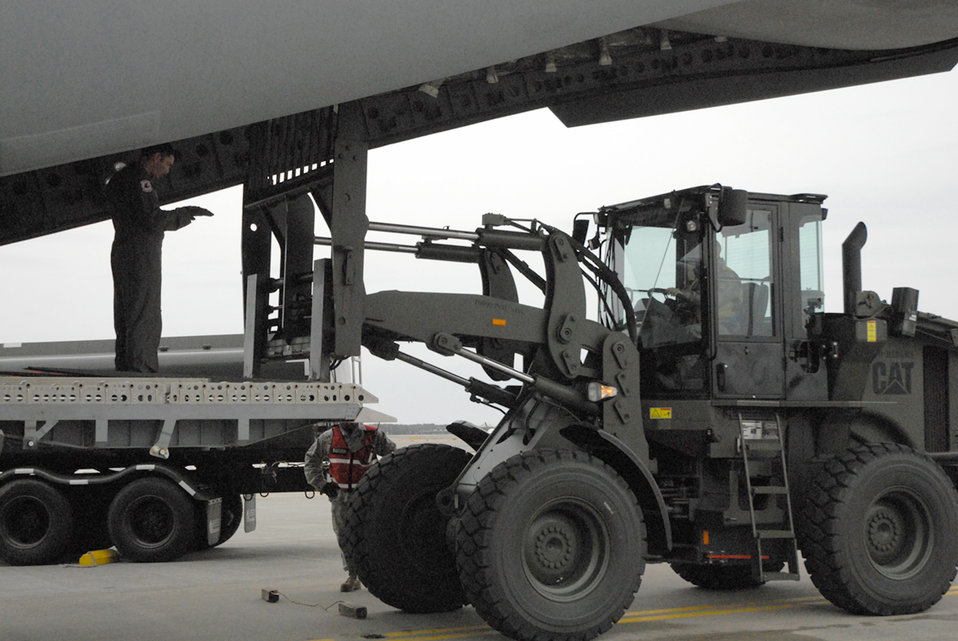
517th Airlift Squardron supports relief efforts in Japan

Joint Base Elmendorf-Richardson, Alaska -- 10KAT forklifts offload humanitarian relief supplies from a C-17 Globemaster III, stationed at the 517th Airlift Squadron, Joint Base Elmendorf-Richardson, Alaska.